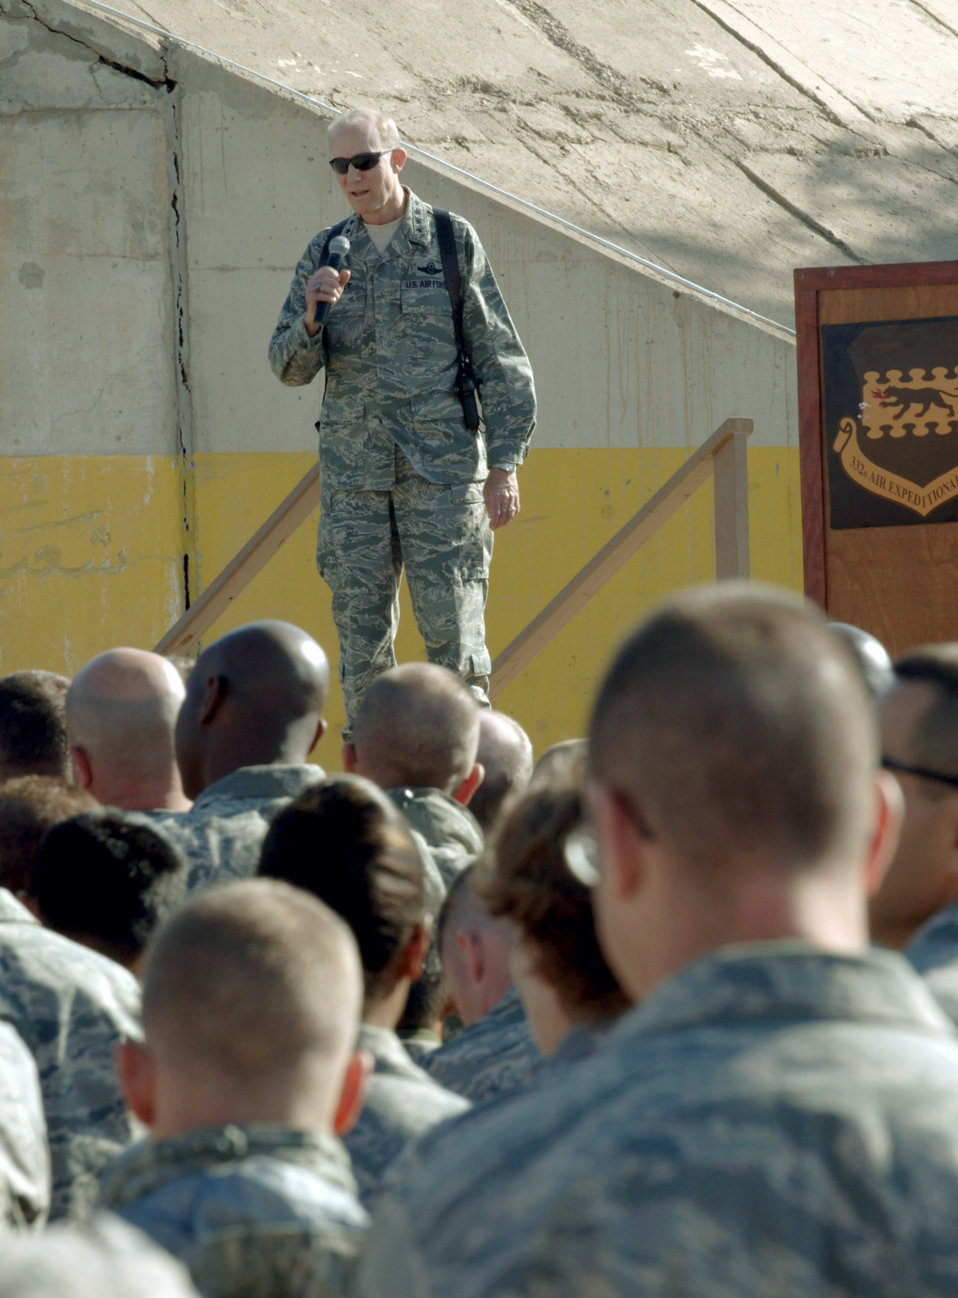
ACC leadership discusses current, future challenges with Balad Airmen

Gen. John Corley speaks to 332nd Air Expeditionary Wing Airmen during an Airman's Call at Joint Base Balad, Iraq, Dec. 3. General Corley and leaders from ACC's A-staff visited the base to thank Airmen for their service and to determine how ACC can better organize, train and equip Airmen deploying to Southwest Asia. General Corley is commander of Air Combat Command.